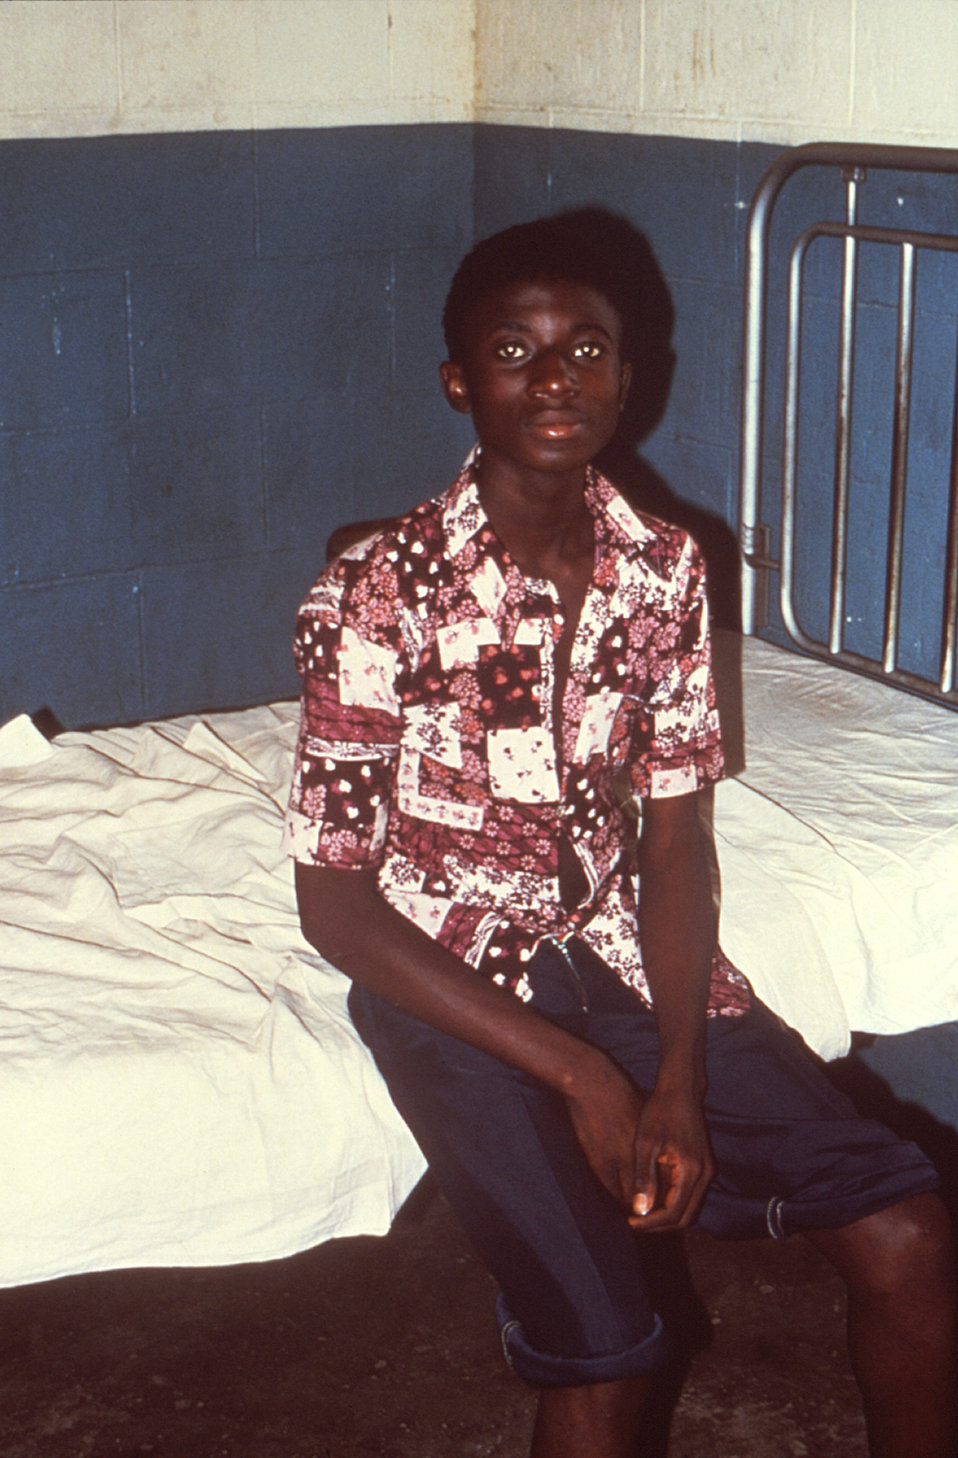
This 1977 image depicts a recuperating young man seated on his bed in the male ward of the Segbwema, Sierra Leone clinic.